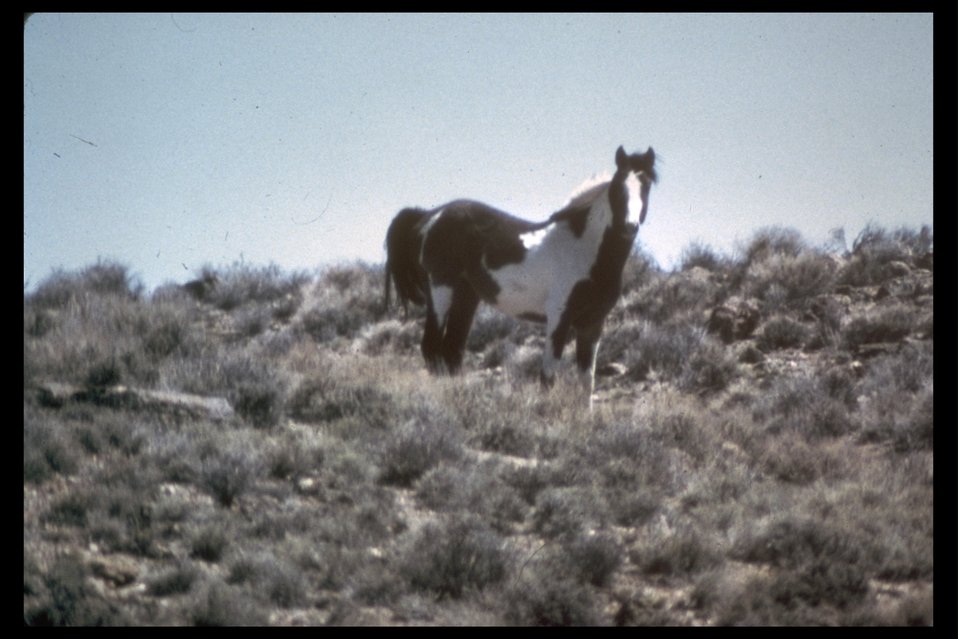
Pinto wild horse on the range.